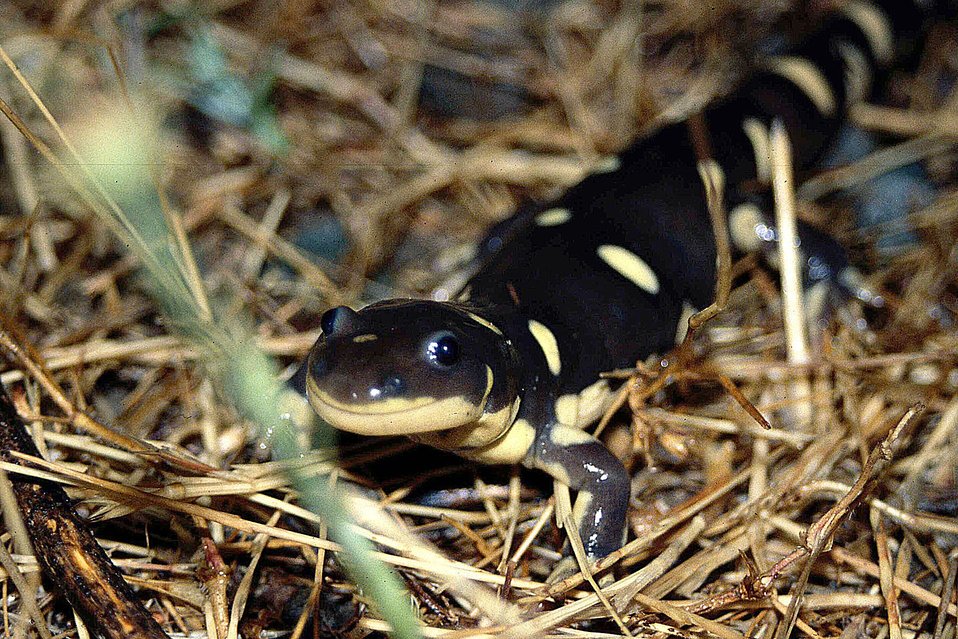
California Tiger Salamander 2